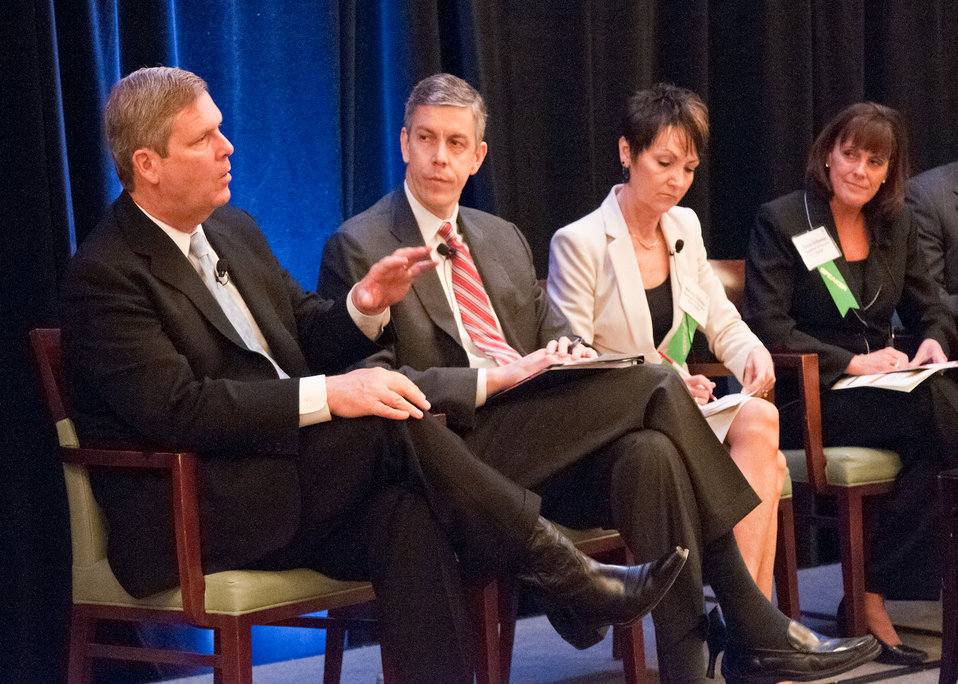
Agriculture Secretary Tom Vilsack responds to questions posed by summit participants at the First National Summit on Rural Education and Economic Development held by the Education Commission of the States in Washington, DC, on Wednesday, May 4, 2011. To the right of Secretary Vilsack are: Education Secretary Arne Duncan, Melody Schopp, Secretary of Education, South Dakota Department of Education, Diane DeBacker, Commissioner of Education, Kansas Department of Education.